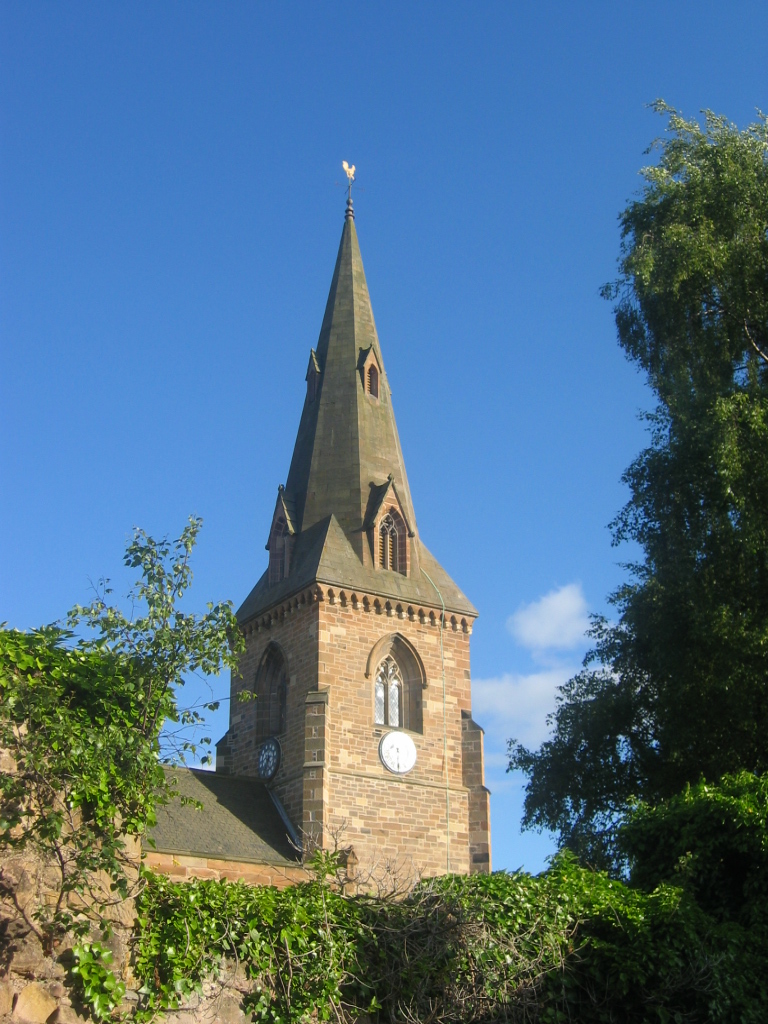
St. Nicholas Buccleugh, Dalkeith, Midlothian, Scotland